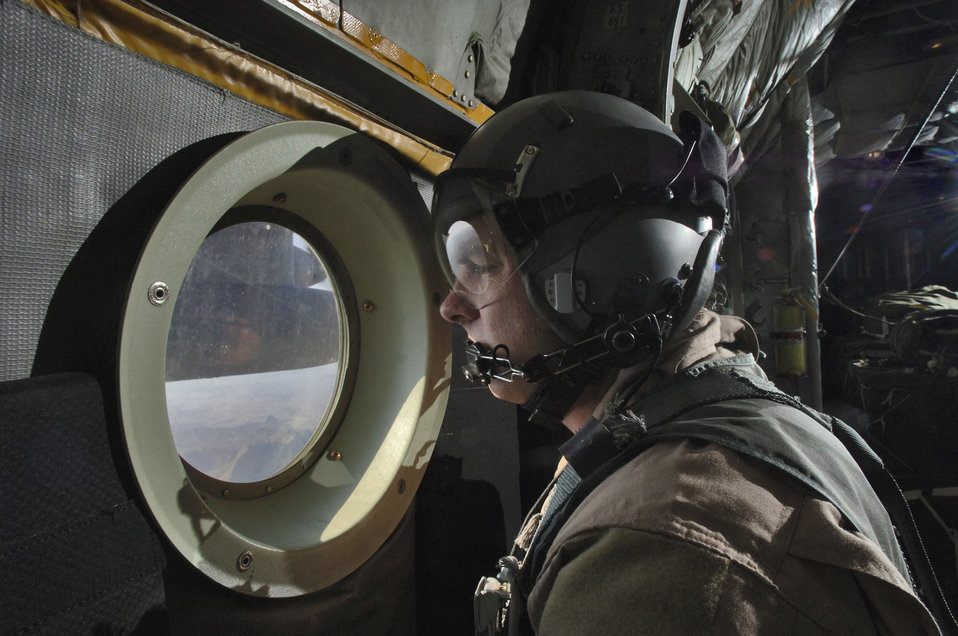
Drop zone

Master Sgt. Bruce Leehan observes the mountainous terrain he will be flying over from Bagram Air Base, Afghanistan, to get to drop zones miles from the Pakistan border Thursday, March 9, 2006. Sergeant Leehan is from the Oklahoma Air National Guard's 185th Airlift Squadron at the Will Rogers World Airport, Okla. and deployed to the 774th Expeditionary Airlift Squadron, Bagram Air Base, Afghanistan.